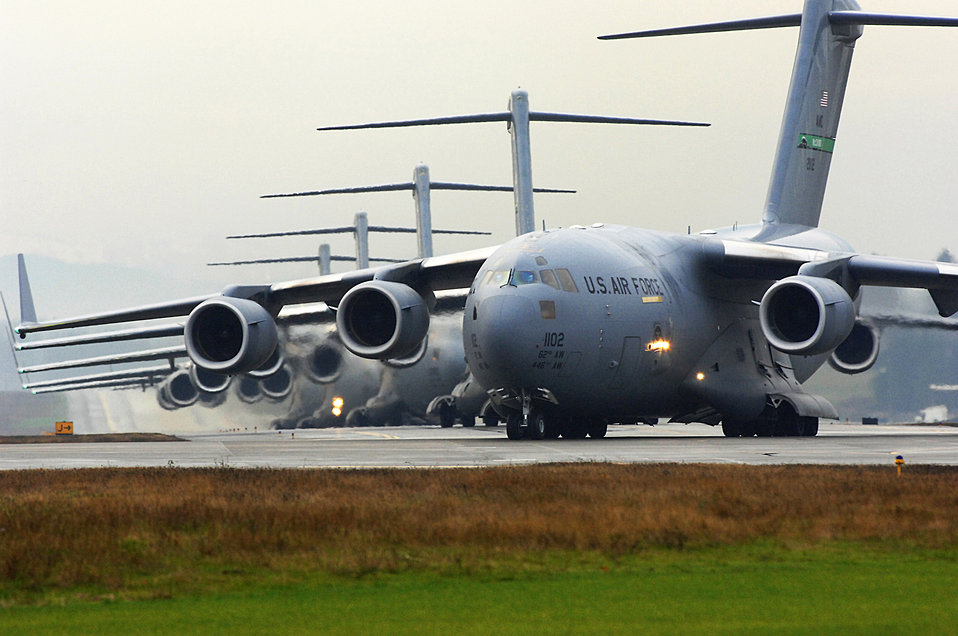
Cleared for takeoff

C-17 Globemaster III's sit on the flightline prior to being cleared for takeoff as part of a formation training exercise Dec. 20 at McChord Air Force Base, Wash.